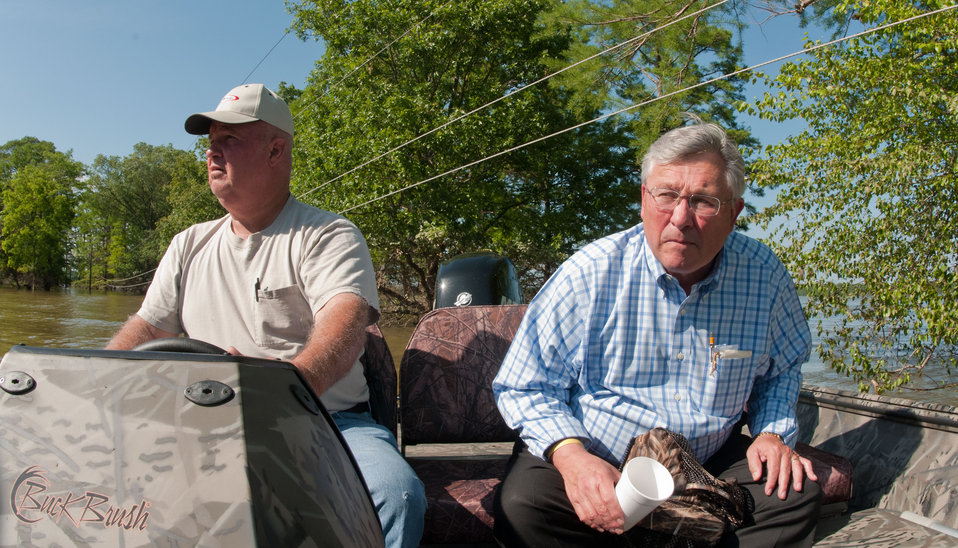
Lauderdale County Mayor Rod Schuh (long sleeve blue shirt) ducks under a power line while Disaster Management Director Jim Jarrett pilots a motorboat to survey the river flood and inundation impact on the people and property of this county in Tennessee, on Saturday, May 21, 2011. The Mississippi and two other rivers border Lauderdale County on three sides. Today’s task was to look at as many of the approximately 300 homes in the river basin as possible.